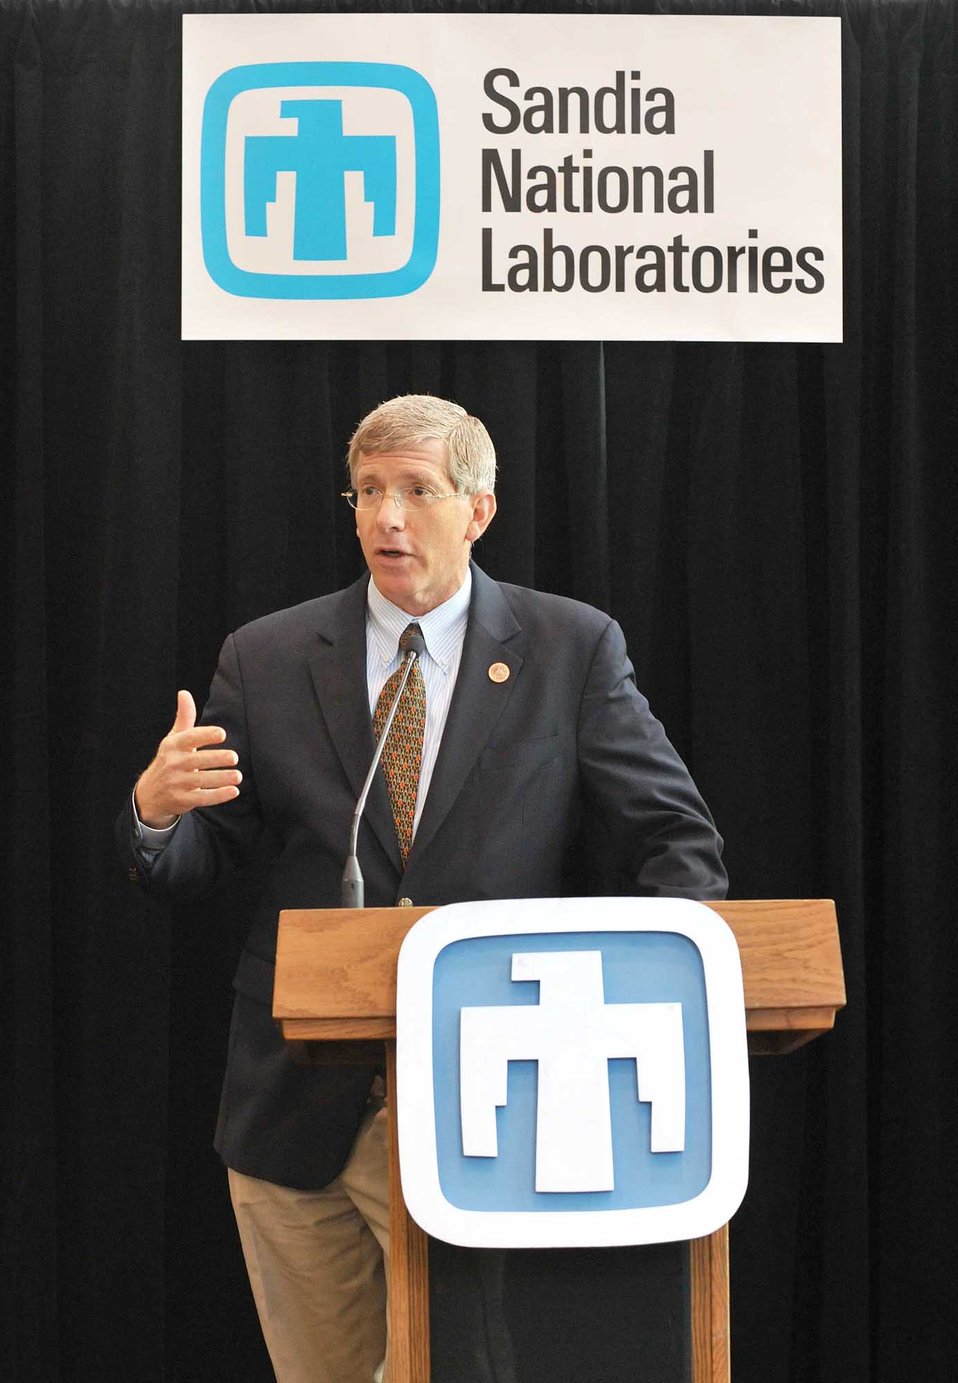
Deputy Secretary Poneman speaks to employees at Sandia National Laboratories.